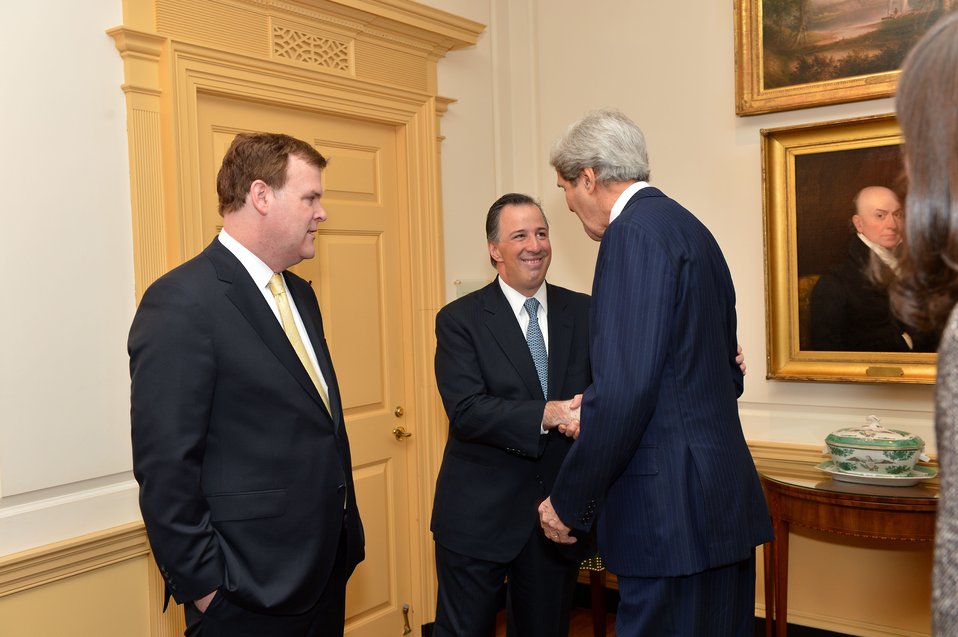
Secretary Kerry Shakes Hands With Mexican Foreign Secretary Meade

With Canadian Foreign Minister John Baird looking on, U.S. Secretary of State John Kerry shakes hands with Mexican Foreign Secretary Jose Antonio Meade as they meet for the North America Trilateral Ministerial at the U.S. Department of State in Washington, D.C., on January 17, 2014.